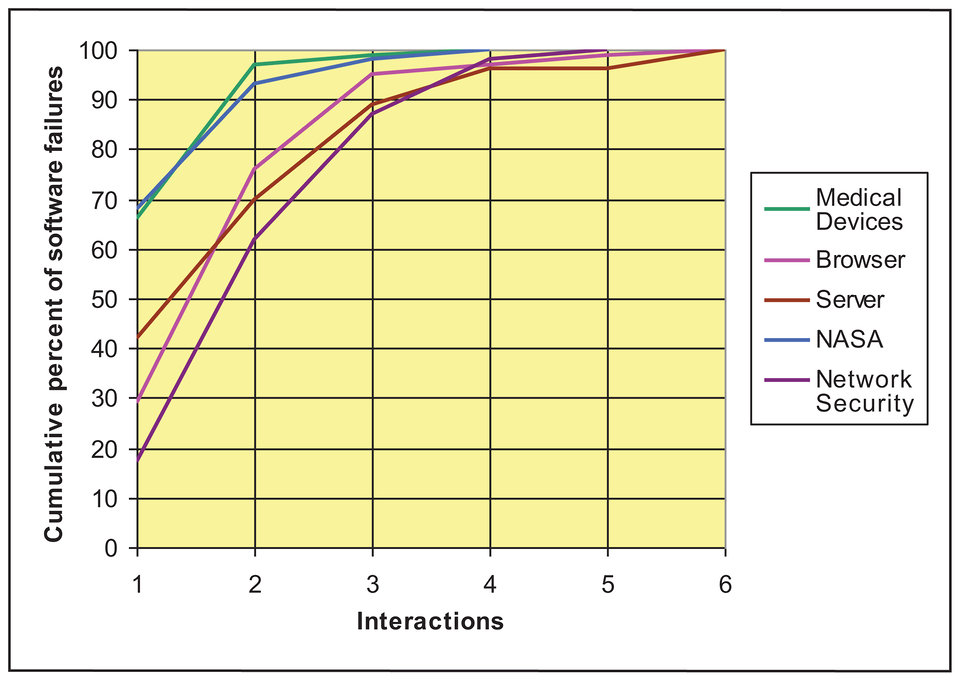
ACTS Software

NIST's software for testing computer systems -- ACTS -- takes advantage of research that shows that virtually all software failures appear to be caused by six or fewer interactions.